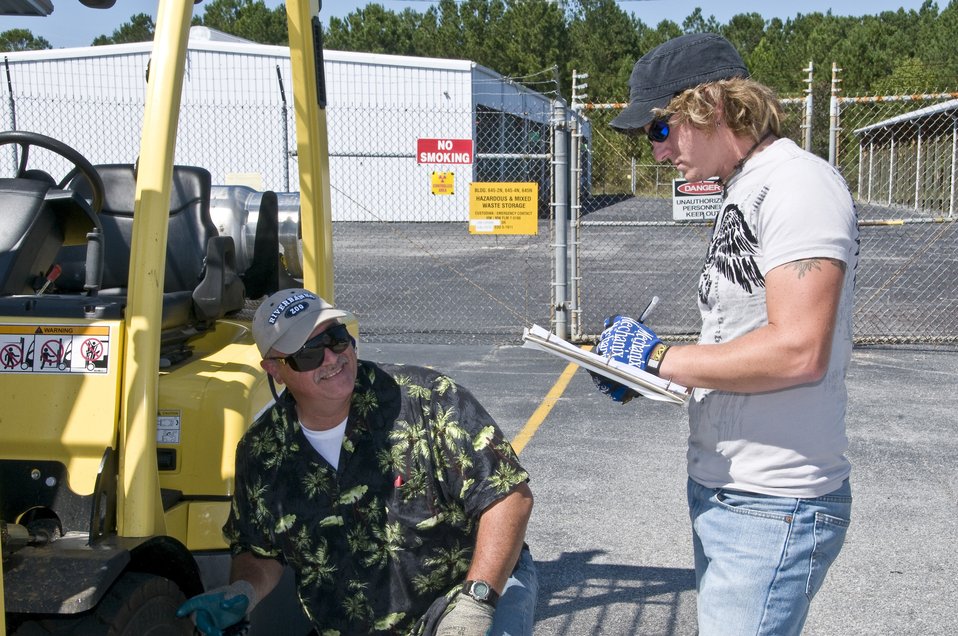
Tim Melloh and Kevin Hooks

New hires at the Savannah River Site, Tim and Kevin are originally from Newport, IN.